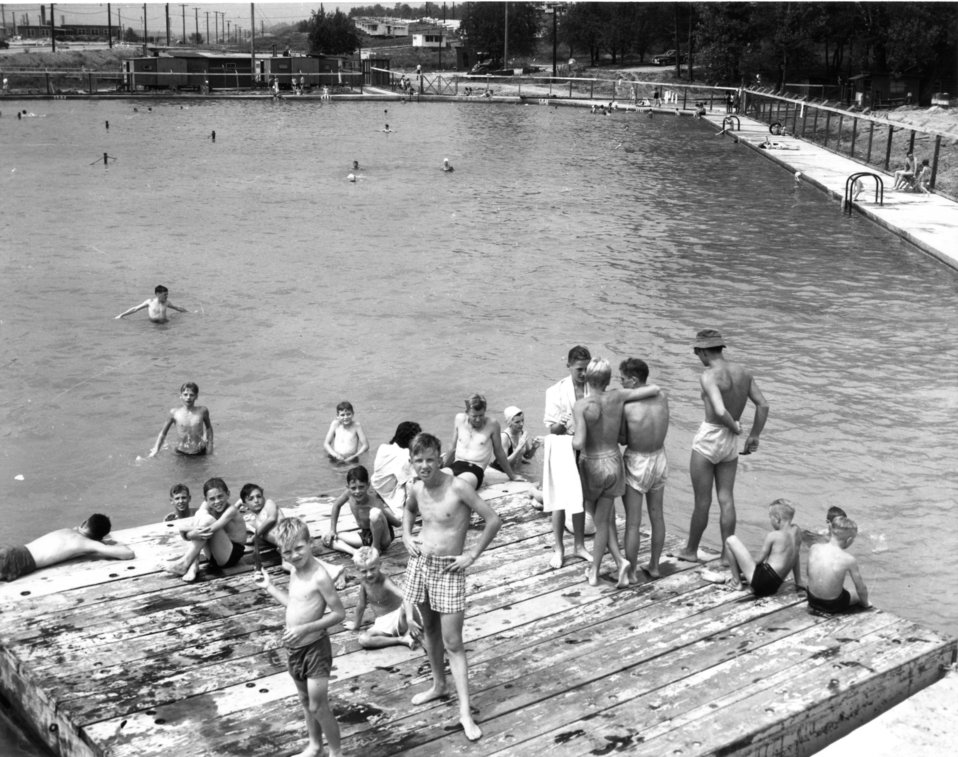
Recreation at Oak Ridge